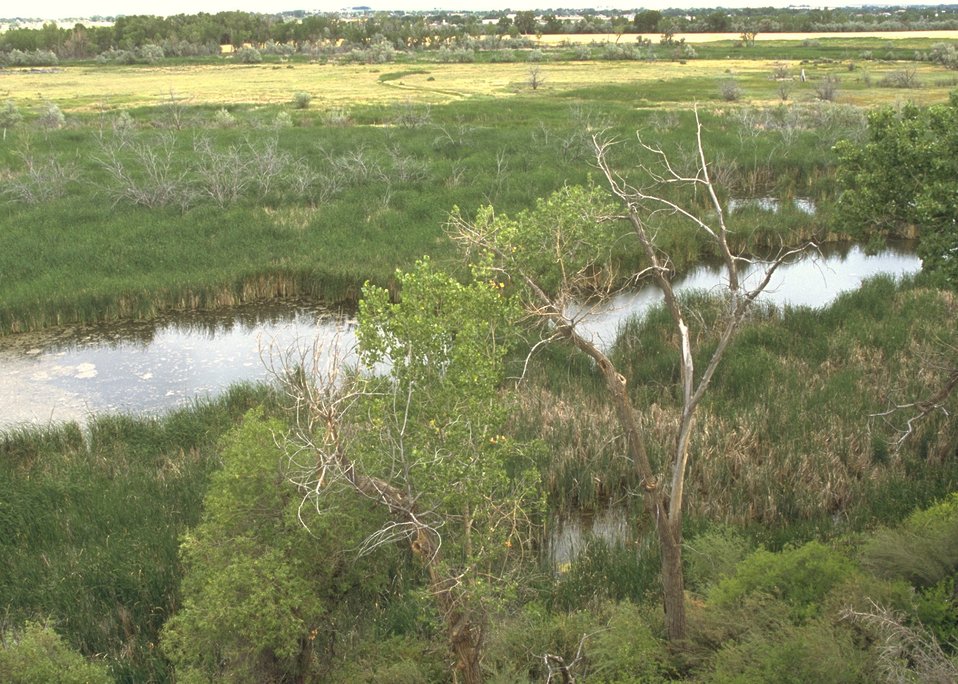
Duck Swamp Interpretive Area, Worland Field Office.